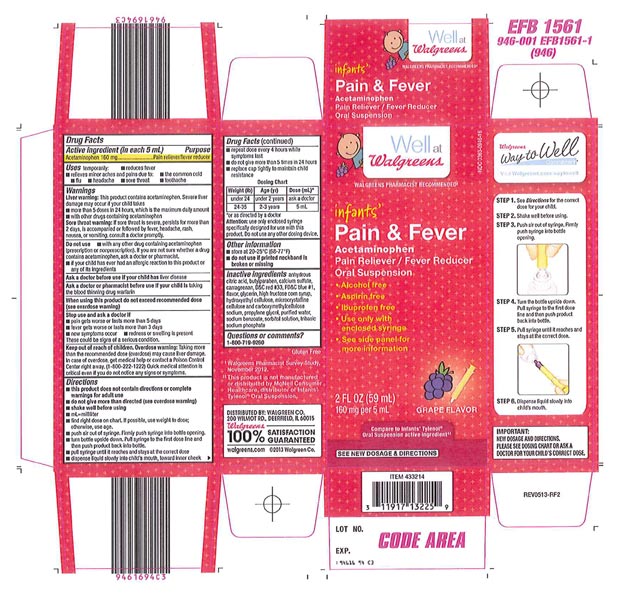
Recalled - Acetaminophen infant suspension liquid

November 1, 2013 – Product Recall – Perrigo Initiates Nationwide Voluntary Product Recall of Acetaminophen Infant Suspension Liquid, 160 Mg/5 Ml, Due to a Potential Defect with the Co-packaged Oral Syringe.